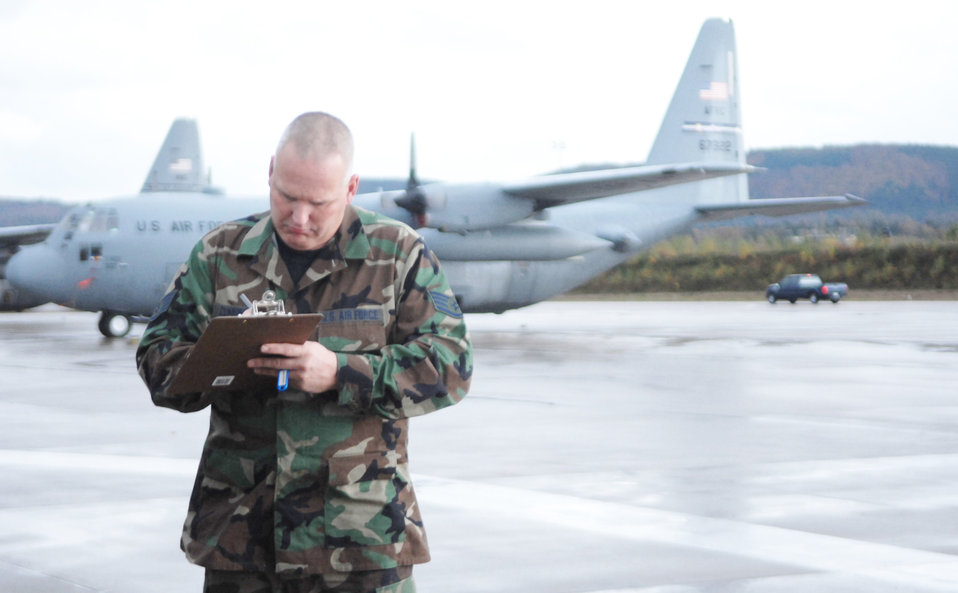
Reserve, Guard members contribute to Ramstein mission

Staff Sgt. Edward Cunningham completes a vehicle checkout form Nov. 4, 2009, at Ramstein Air Base, Germany. Sergeant Cunningham is a reservist serving a deployment here with the 38th Expeditionary Airlift Squadron.